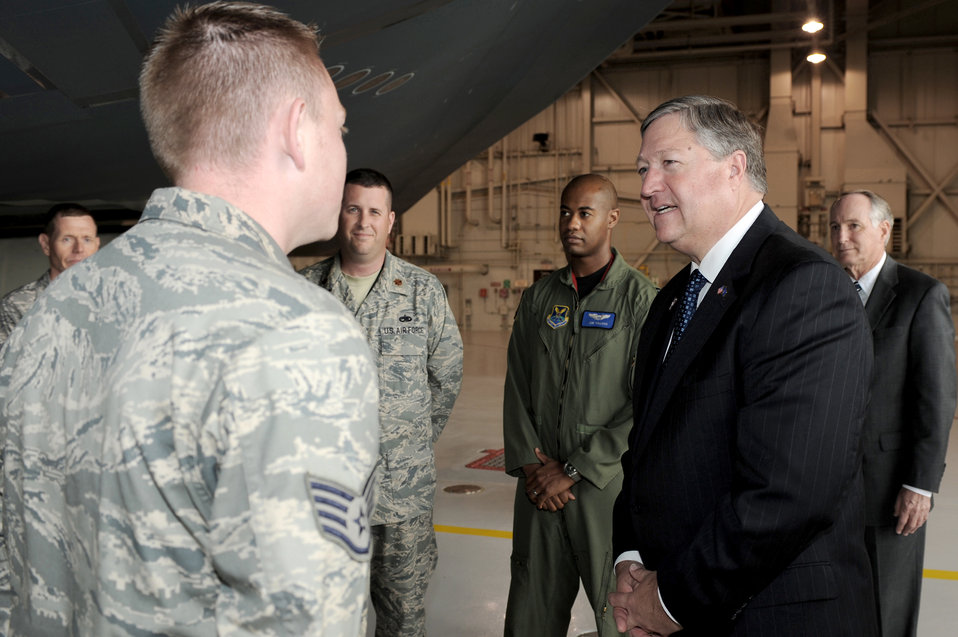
SecAF impressed with Airmen, B-2

Staff Sgt. Jacob Westad briefs Secretary of the Air Force Michael Donley on hangar B-2 Spirit operations June 8, 2010, at Whiteman Air Force Base, Mo. Sergeant Westad is a 509th Aircraft Maintenance Squadron dedicated crew chief.